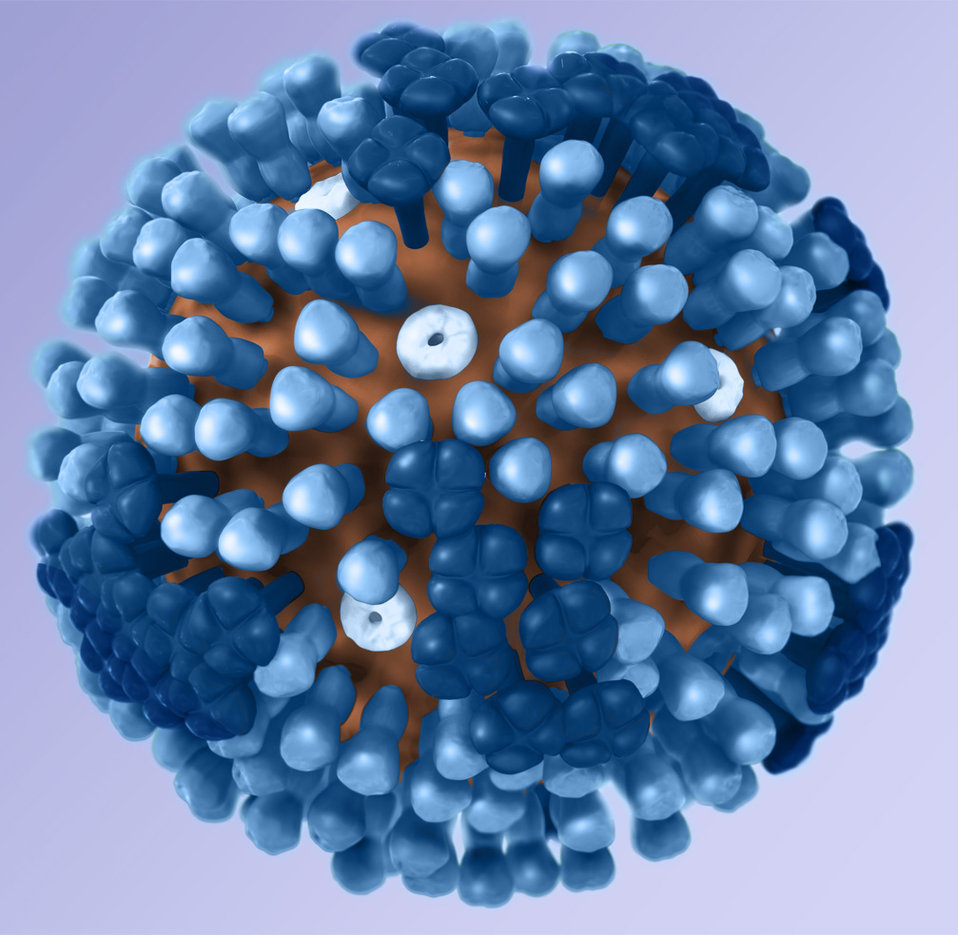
On a lavender background, this illustration provides a 3D graphical representation of a generic influenza virion's ultrastructure, and is not specific to a seasonal, avian or 2009 H1N1 virus. See PHIL 11881 for a cut-away view revealing the virion's interior, which includes a key to the virion's protein constituents.